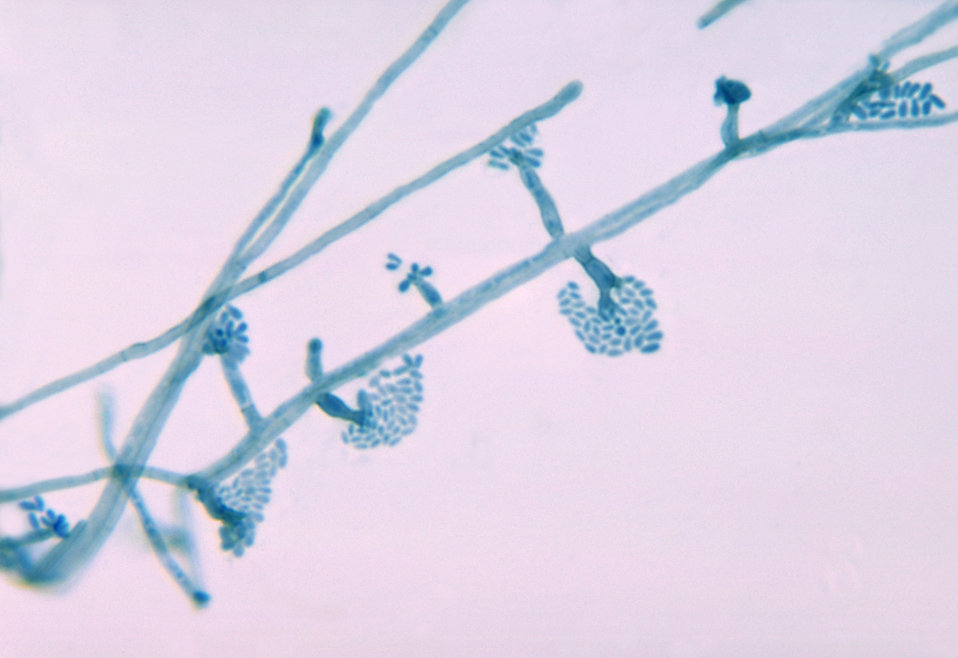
This is a photomicrograph of the fungus Phialophora verrucosa.